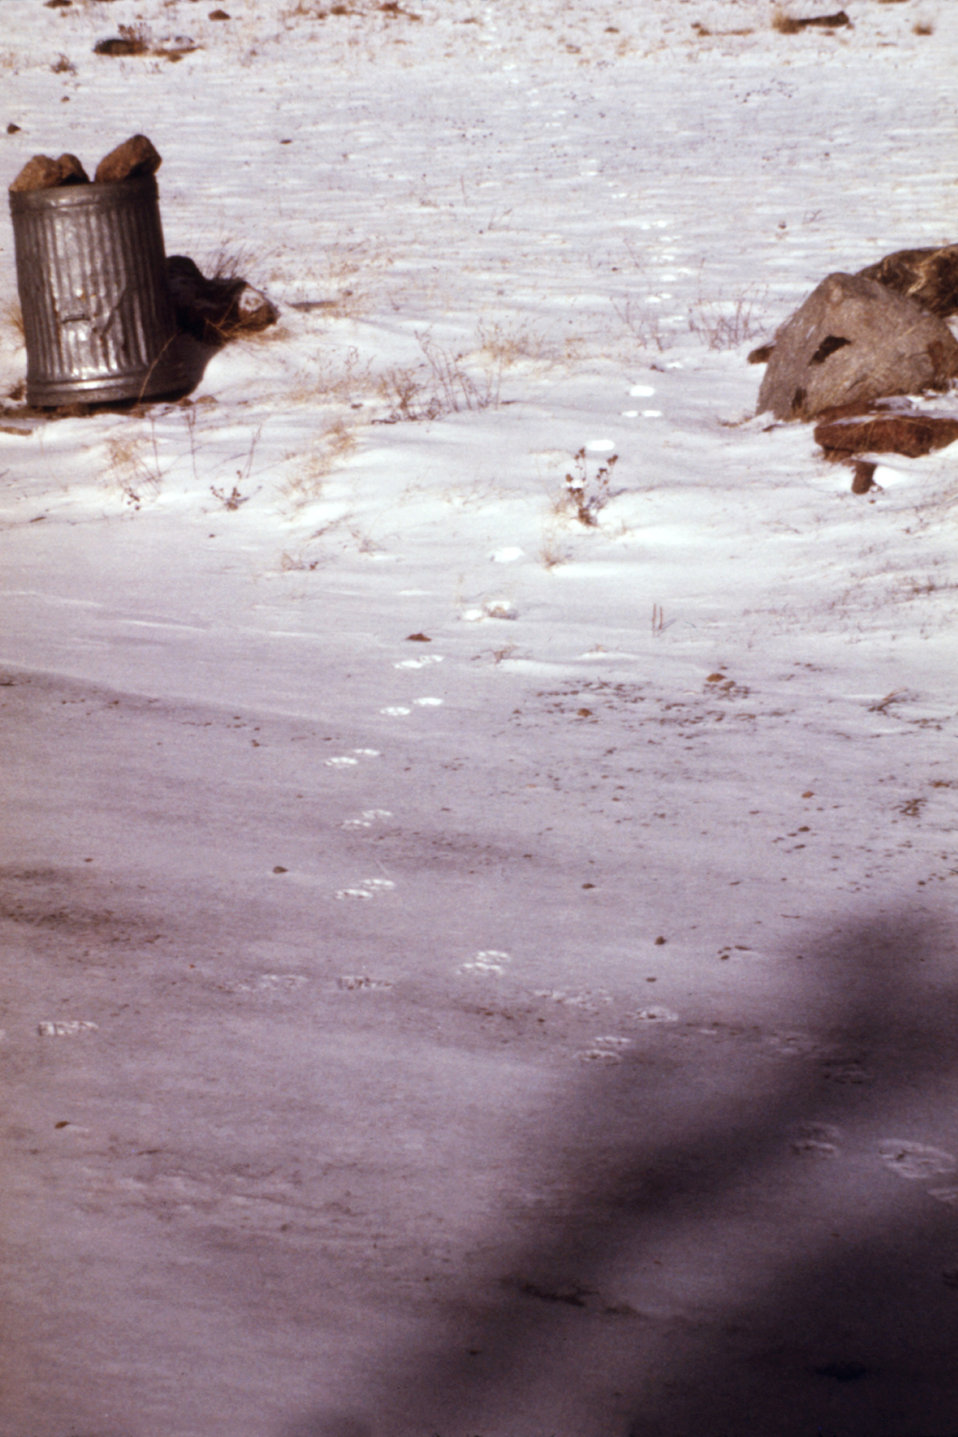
These coyote, Canis latrans tracks were found in an Estes Park, Colorado campground during a plague and tick fever study.